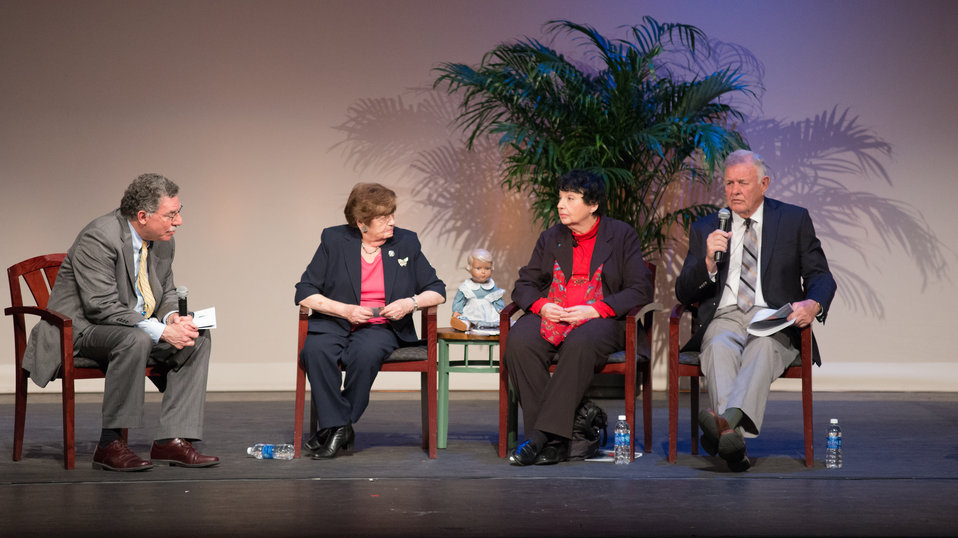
The 2013 Federal Inter-Agency Holocaust Remembrance Day, at the Lincoln Theatre, on Wednesday, April 17, 2013, in Washington, D.C. The moderator is United States Holocaust Memorial Museum Division of the Senior Historian Director Peter Black, Ph.D., at podium or seated on left, and the guest speakers, left to right, are Theresienstadt Concentration Camp Czech Jewish Holocaust Survivor Ela Stein-Weissberger, and German Jewish Holocaust Survivor Inge Auerbacher; and Dachau Concentration Camp Liberator Jimmy Gentry. Since the 1979 President’s Commission on the Holocaust, an annual proclamation signed by the President of the United States recognizes the importance of remembering the atrocities of the Holocaust that should never be forgotten or be ignored.